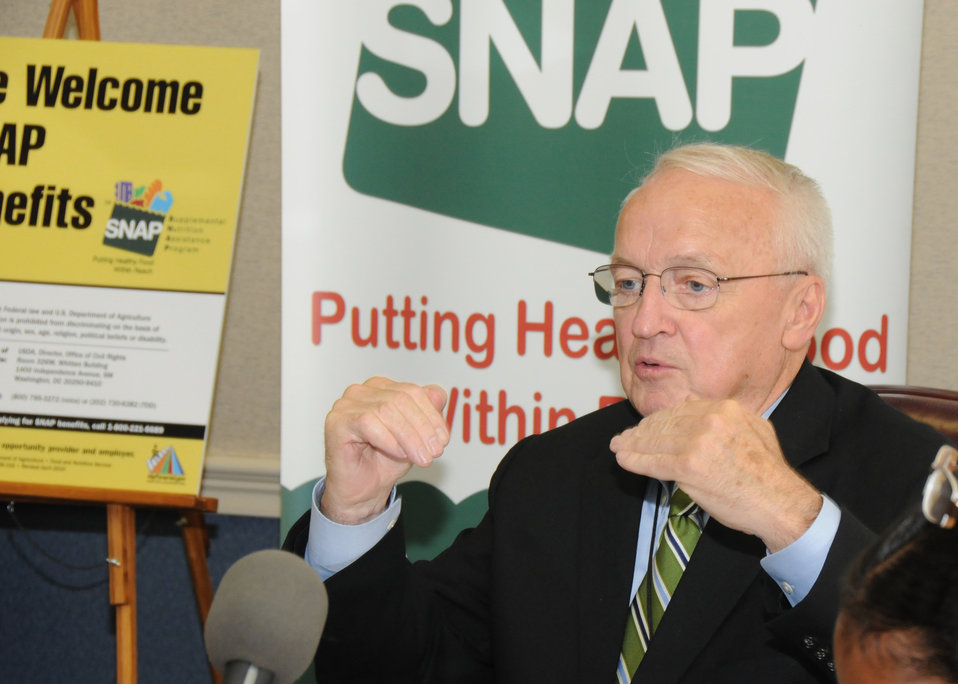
Agriculture Under Secretary for Food, Nutrition and Consumer Services Kevin Concannon unveiled the new sign for the Supplemental Nutrition Assistance Program (SNAP) “We Welcome SNAP Benefits” and announced the premier of the SNAP Retail Locator web tool at the Department of Agriculture in Washington, D. C., on Wednesday, May 13, 2010. USDA photo 10di1363-66.